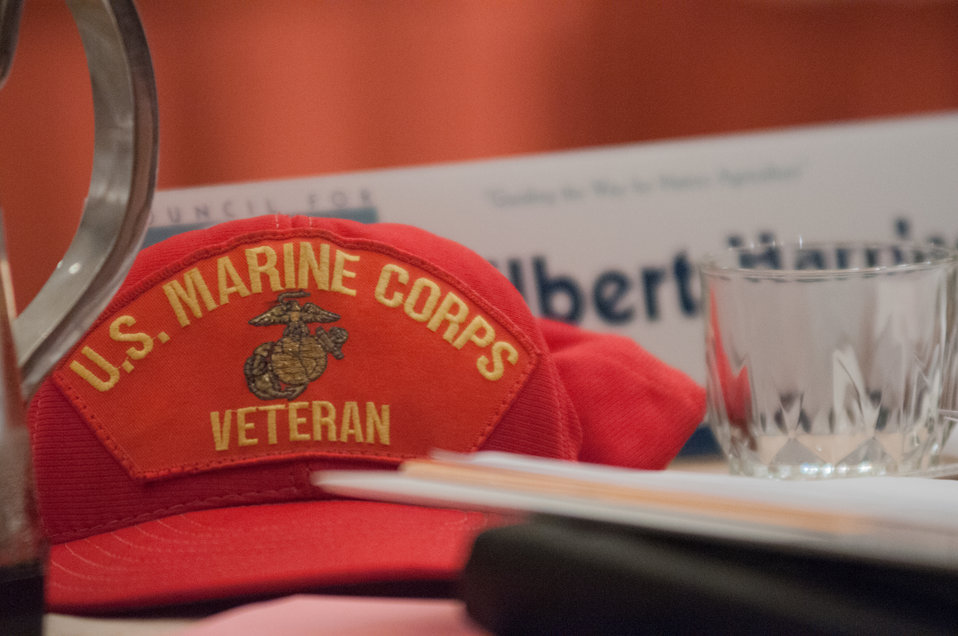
Gilbert Harrison, a rancher of the Navaho Nation in Shiprock, NM and U.S. Marine Corps Veteran, during the U.S. Department of Agriculture's (USDA) Council for Native American Farming and Ranching (CNAFR) advisory committee meeting, on Monday, Sep. 9, 2013 at the L'Enfant Plaza Hotel, in Washington, D.C. CNAFR was created to advise the Secretary on ways to eliminate barriers to participation for Native American Farmers and Ranchers in USDA programs. The Council was established as part of the Keepseagle settlement, and is conducted under the oversight of USDA's Office of Tribal Relations, which is part of the Office of the Secretary of Agriculture. Also in attendance is The Director of Tribal Relations Leslie Wheelock, Agriculture Assistant Secretary for Civil Rights Joe Leonard, Jr. Ph.D., Farm Services Administration Administrator Juan M. Garcia and Deputy Administrator for Farm Loans Programs Chris Beyerhelm.